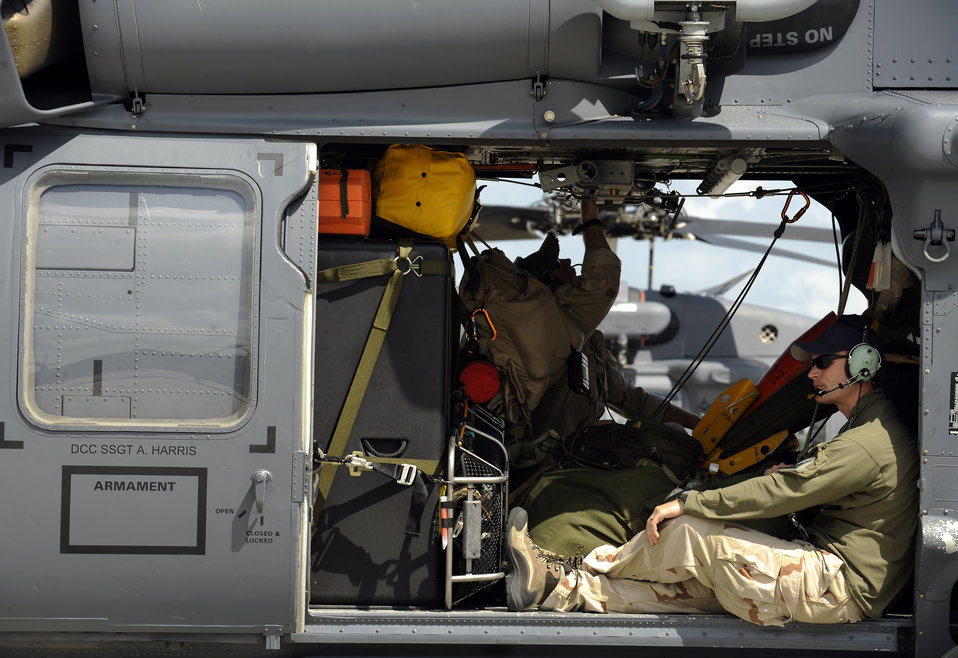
23rd Wing deploys

Airmen from the 23rd Wing at Moody Air Force Base, Ga., prepare to depart for Gulfport, Miss., Sept. 12. The helicopters and aircrews from the 41st Rescue Squadron will stage out of Gulfport and provide search and rescue support during Hurricane Ike.